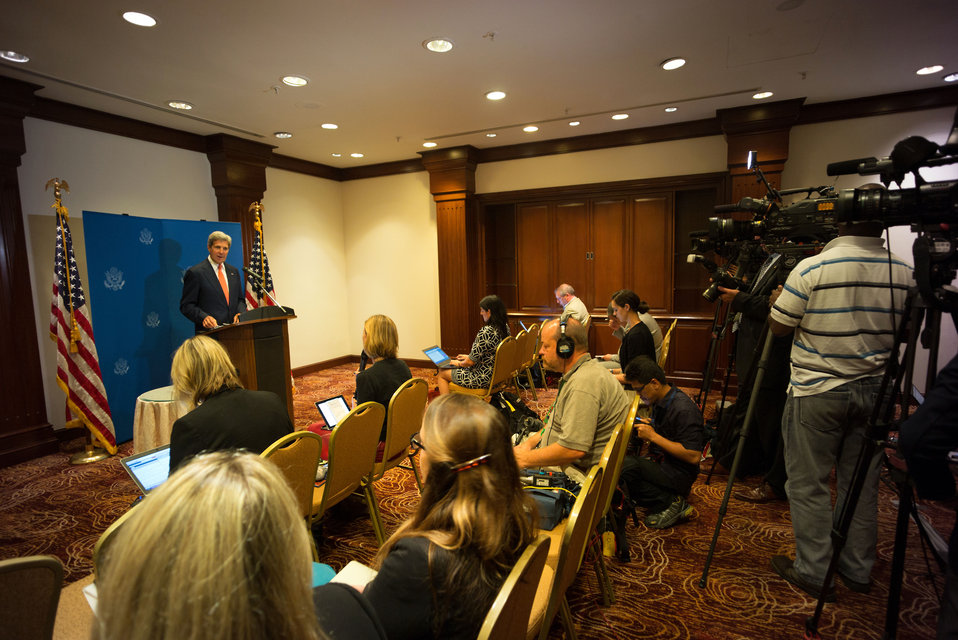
Secretary Kerry Addresses Reporters in Kuala Lumpur, Malaysia

U.S. Secretary of State John Kerry addresses the media during a press conference in Kuala Lumpur, Malaysia, on October 10, 2013.